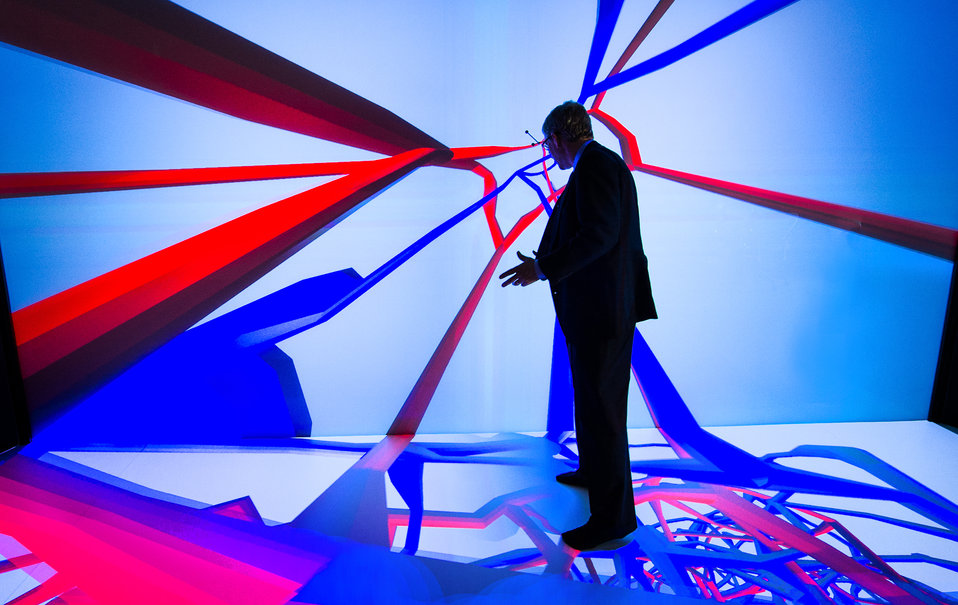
Acting Secretary Daniel Poneman, U.S. Department of Energy

April 19, 2013- Standing in a 3D visualization room, Secretary Poneman “goes inside” the active layer of an organic solar cell, where sunlight is harvested.